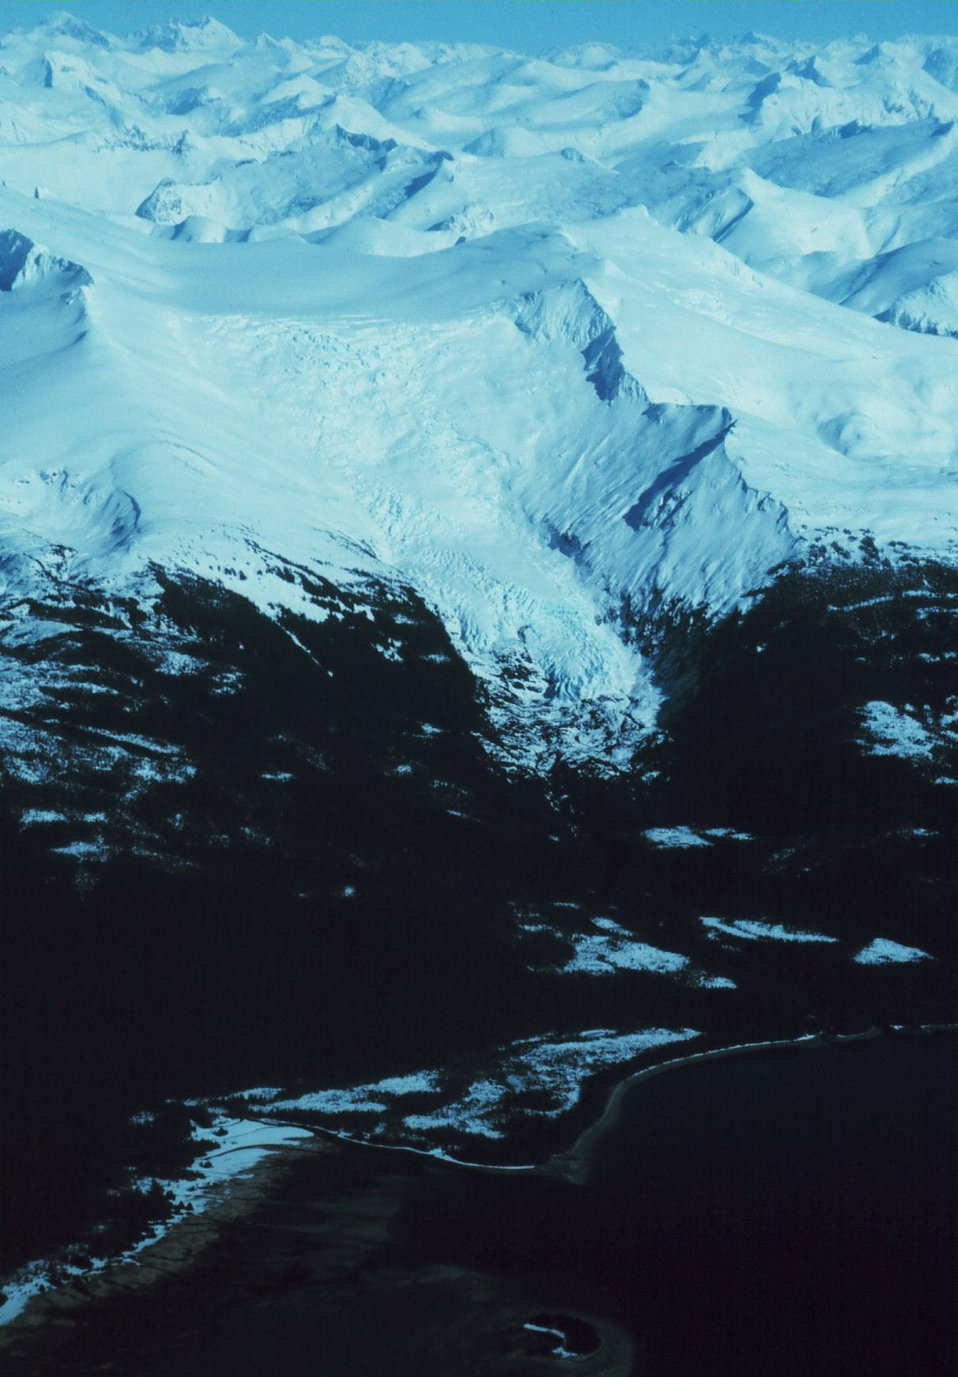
Snow-covered mountains and a retreating glacier to the east of Stephens Passage